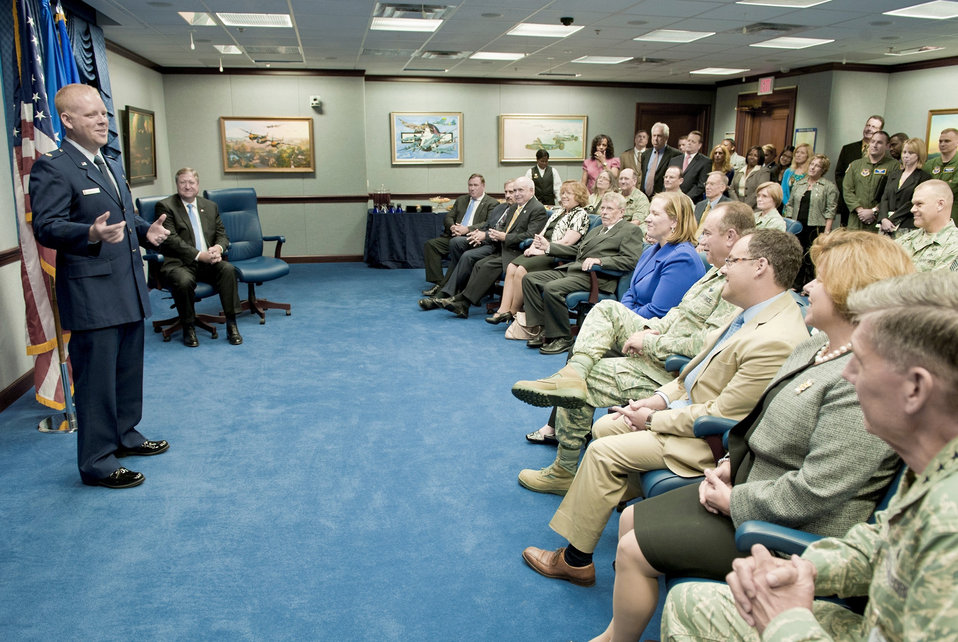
International Affairs Excellence Award

Secretary of the Air Force Michael Donley (seated second from left) looks on as Maj. Paul Sebold gives remarks after receiving the Air Force International Affairs Excellence Award for 2010 during a ceremony May 31, 2011, in the Pentagon. Established in 2008, the annual award recognizes the Air Force member who is judged to most effectively build, sustain, expand and guide enduring international relationships. Major Sebold is assigned to Headquarters U.S. Air Forces in Europe at Ramstein Air Base, Germany, as a political
military affairs strategist and country desk officer.